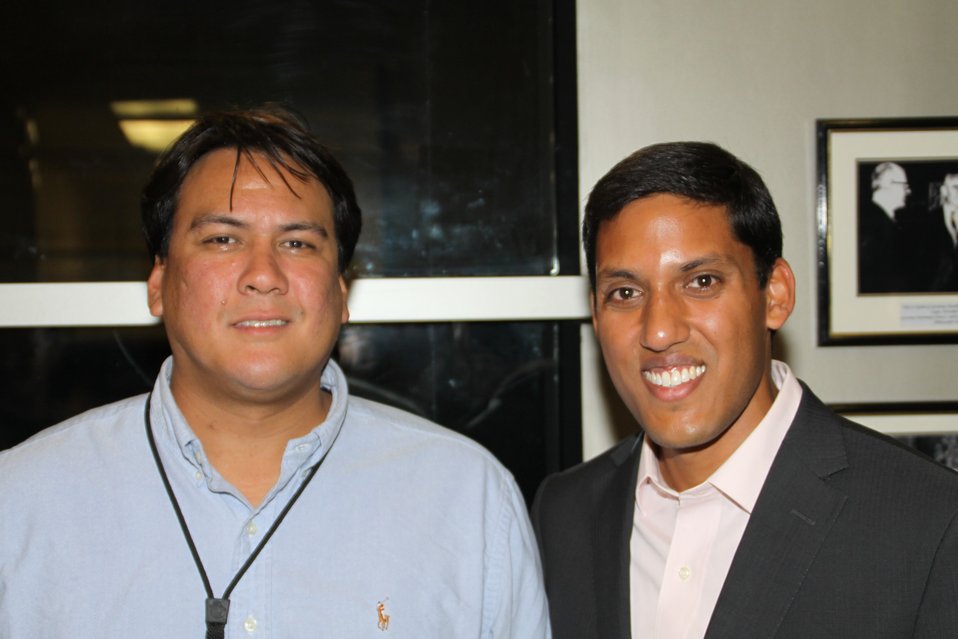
US Embassy Town Hall July 21, 2010